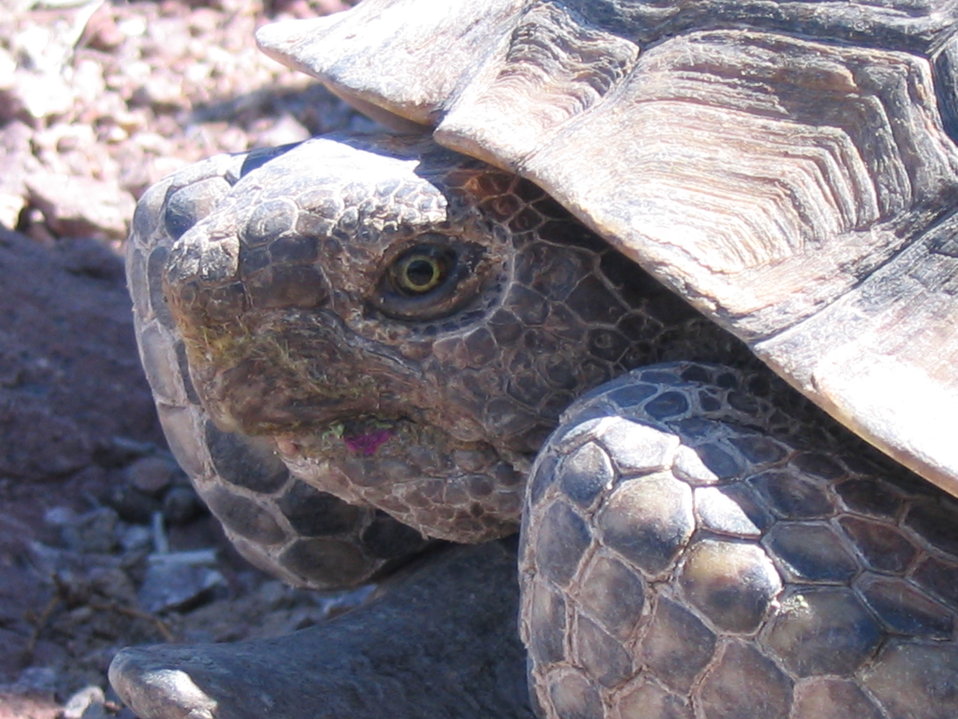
Mojave Desert Tortoise (Gopherus agassizii)

Desert tortoise (Gopherus agassizii) commonly known as the Mojave desert tortoise.